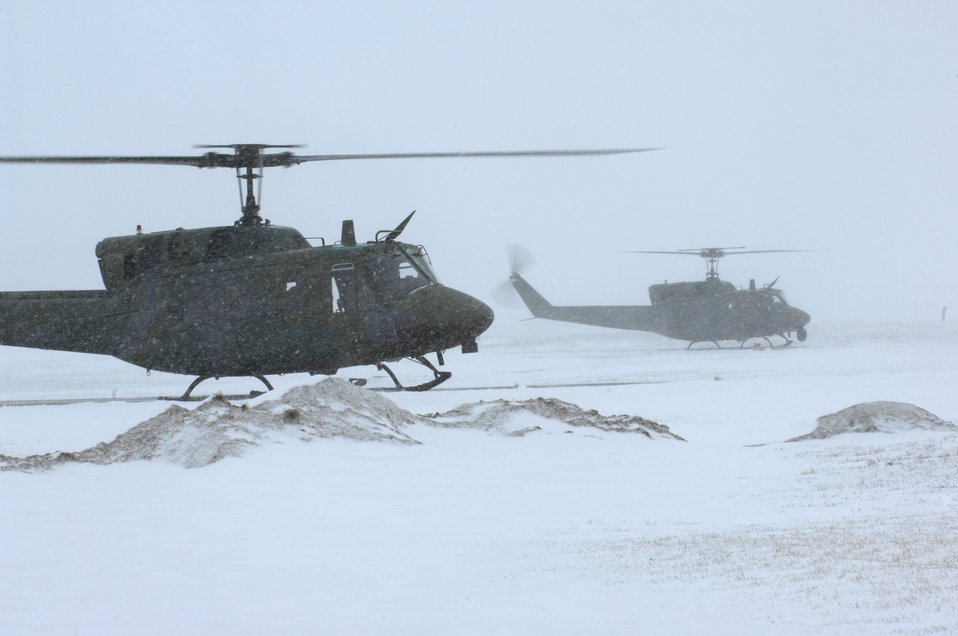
Minot Airmen render aid to flood efforts

A pair of UH-1N Huey helicopters take off for Bismarck, N.D., March 25 from Minot Air Force Base, N.D., to assist in flood relief efforts. Eight crewmembers and the two helicopters from the 54th Helicopter Squadron deployed to aid the relief efforts.